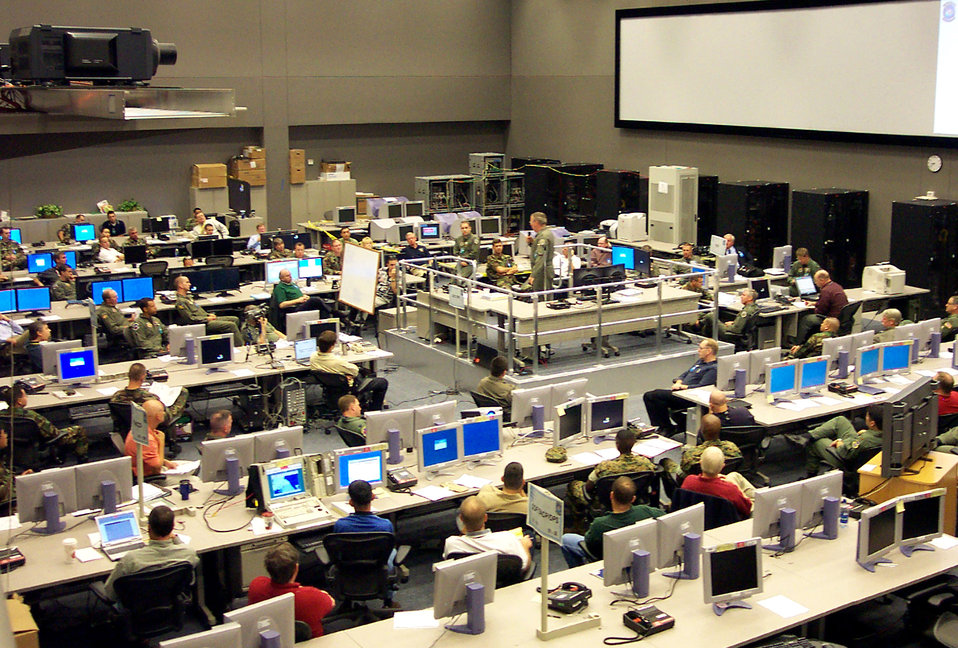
Global Cyberspace Integration Center hot bench active

The Global Cyberspace Integration Center hot bench team assesses various software and information systems to detect potential problems before they are delivered to the warfighter. The GCIC is at Langley Air Force Base, Va.